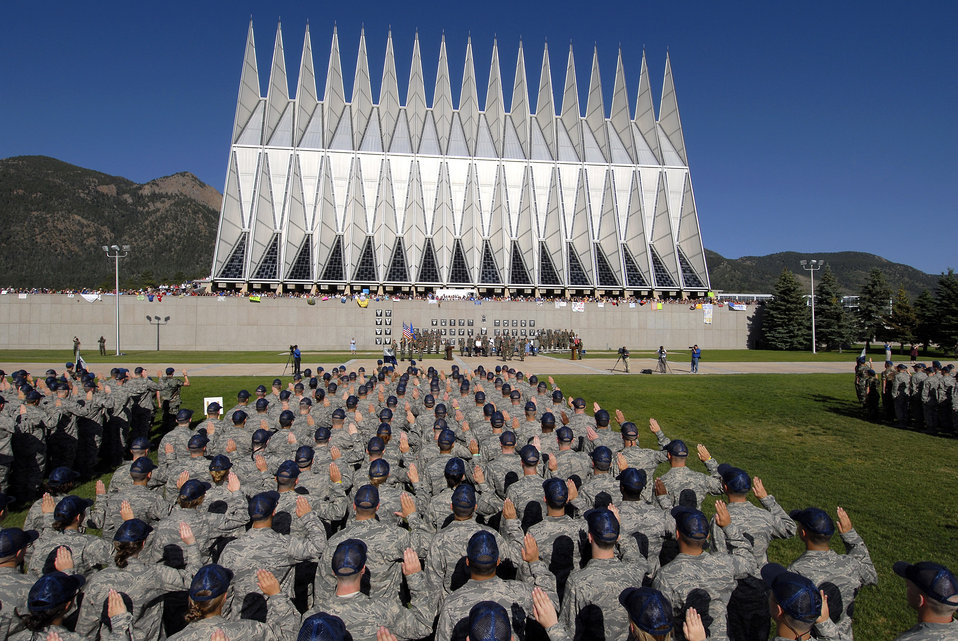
Class of 2012 Arrives

The Class of 2012 recites the Oath of Allegiance on Day Two of the 38 days of Basic Cadet Training June 27 at the U.S. Air Force Academy, Colo. Inprocesing marks the start of 38 days of Basic Cadet Training, which is designed to prepare basic cadet trainees for entry into the cadet wing.